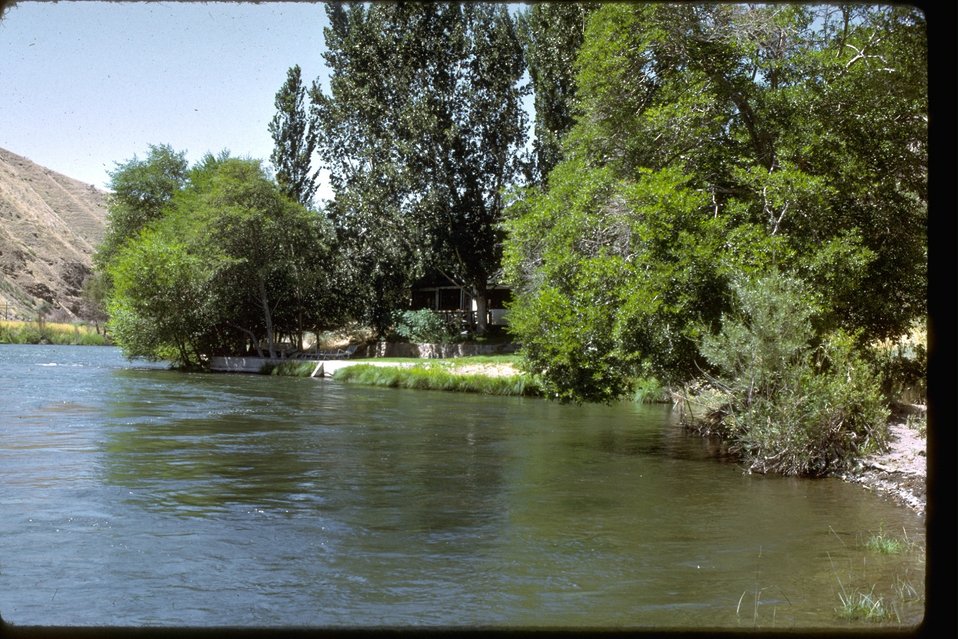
Rainbow Bend of the Lower Deschutes River.